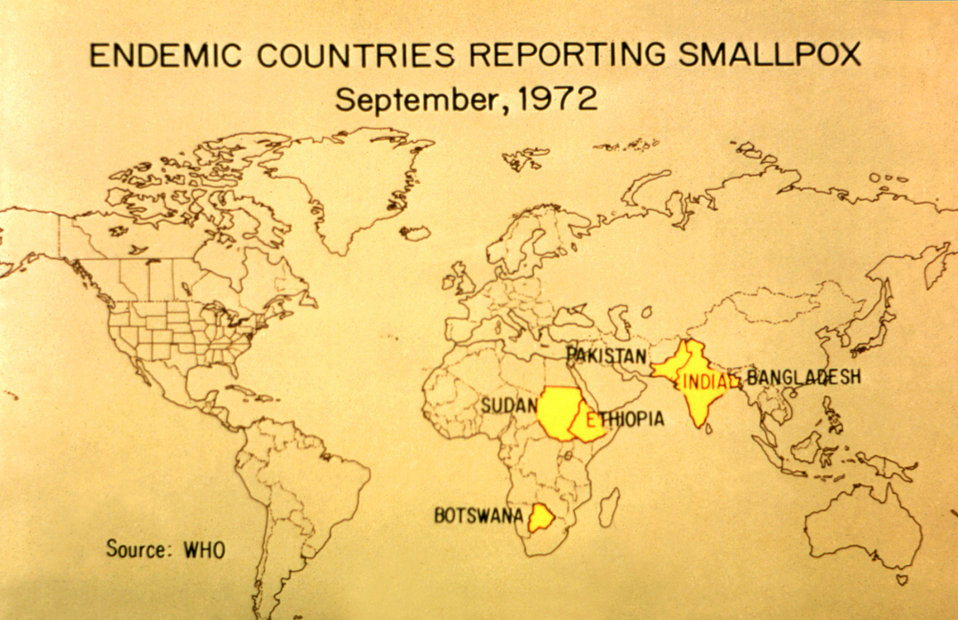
From 1972, this map revealed the worldwide distribution of smallpox, and the countries in which it was endemic.